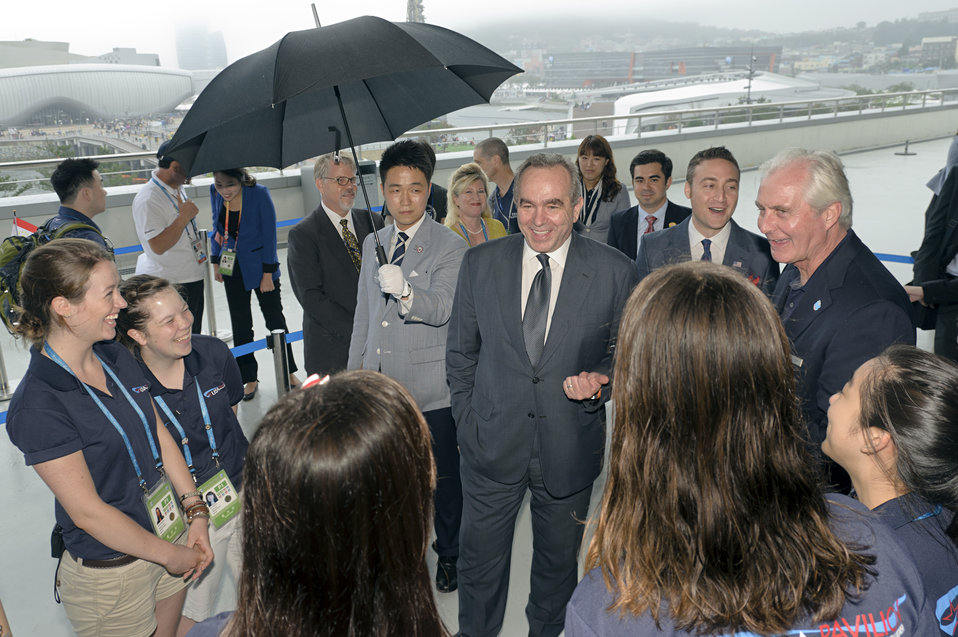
Assistant Secretary of State for East Asian and Pacific Affairs Kurt Campbell meets with U.S. Student Ambassadors at the USA Pavilion 2012 in Yeosu, South Korea, on July 14, 2012.